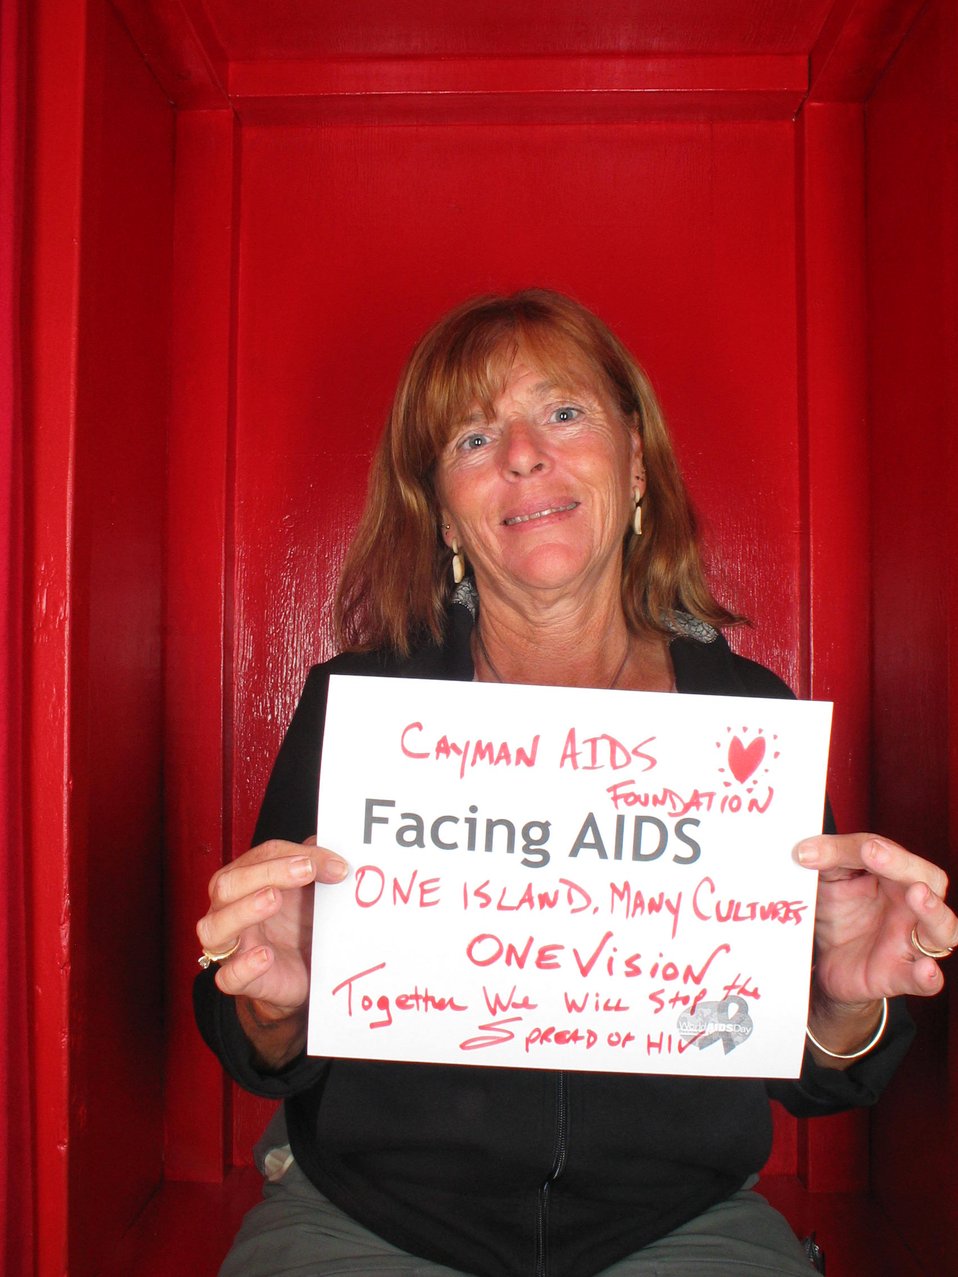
Facing AIDS One Island, Many Cultures, Together we will stop the spread of HIV